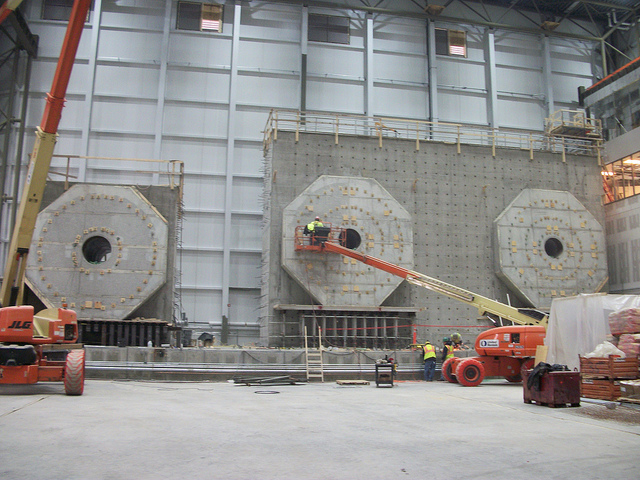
Wind Technology Testing Center - Boston

Workers put the finishing touches on the three face plates at the Wind Turbine Testing Center. Each face plate is 12 inches thick and 20 feet in diameter and weigh 74 tons.